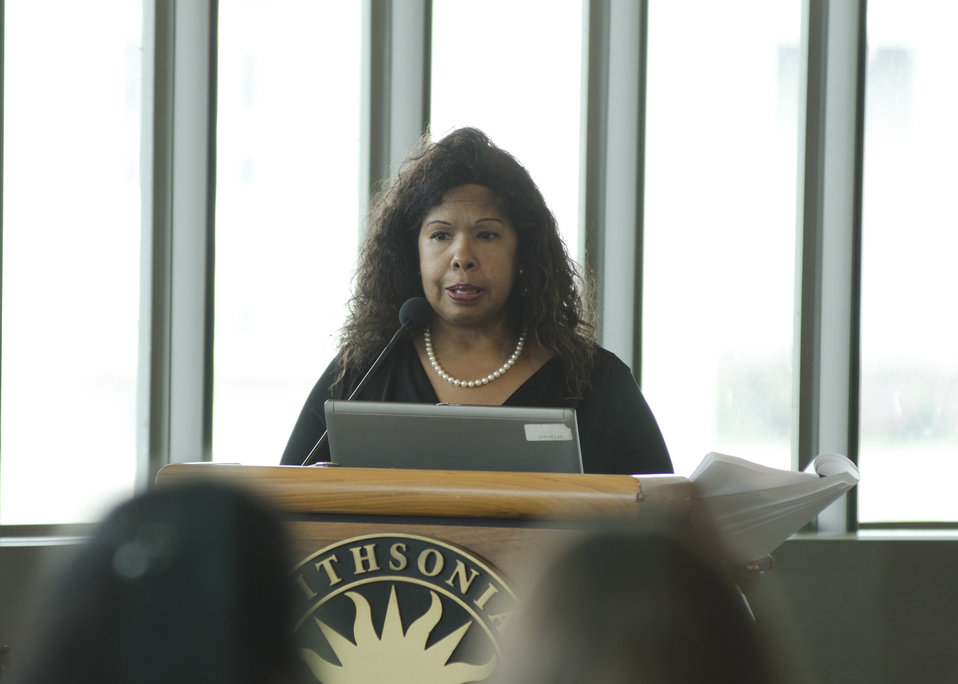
U.S. Department of Agriculture (USDA) Food Nutrition Service (FNS) Office of Strategic Initiatives, Partnerships, and Outreach spokesperson Pam Phillips, speaks at the first business meeting of the U.S. Department of Agriculture’s (USDA) Council for Native American Farming and Ranching (CNAFR) held at the National Museum of the American Indian in Washington, D.C., on Tuesday, Aug. 14, 2012. CNAFR was created to advise the Secretary on ways to eliminate barriers to participation for Native American Farmers and Ranchers in USDA programs. The Council was established as part of the Keepseagle settlement, and is conducted under the oversight of USDA's Office of Tribal Relations under the Office of the Secretary of Agriculture.